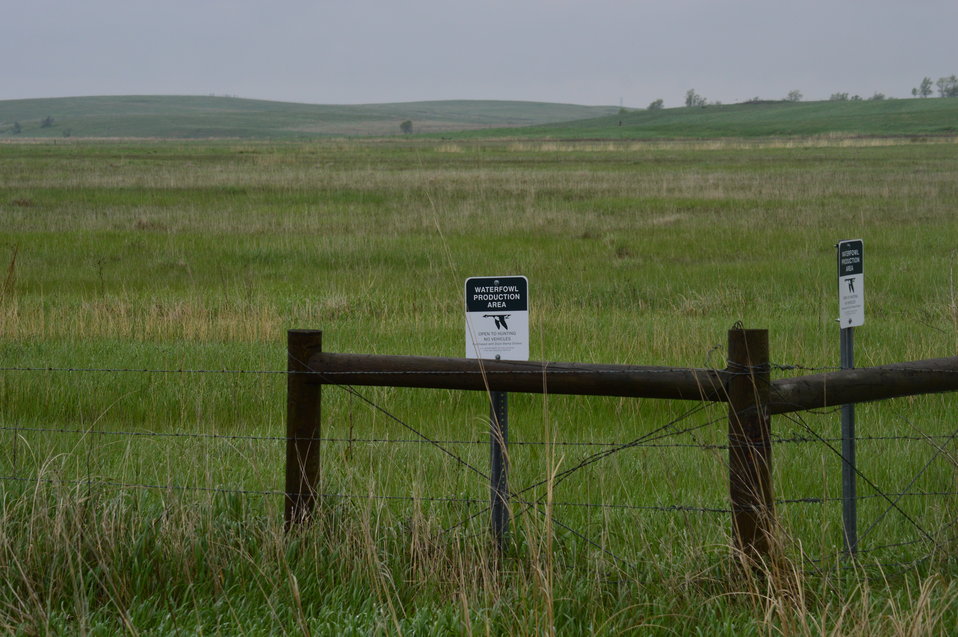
Waterfowl Production Area signs

Scenery and wildlife at Lost Lake National Wildlife Refuge in North Dakota.